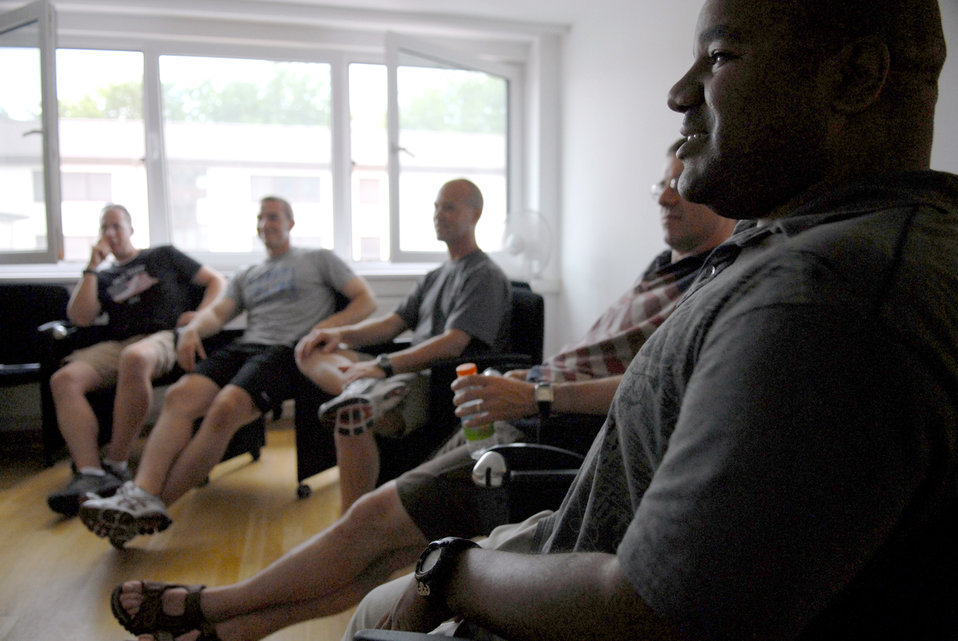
Delta flight

Staff Sgt. Leonard Livas guides a conversation with members of Delta explosive ordnance disposal flight from the 755th Air Expeditionary Squadron July 4, 2010, at Ramstein Air Base, Germany. Guided small group conversations are a key element to the Air Force Deployment Transition Center program that prepares security forces, convoy operations and EOD Airmen returning from a combat environment to reintegrate with their families and everyday lives at home station. Sergeant Livas is an EOD career field facilitator at the DTC.